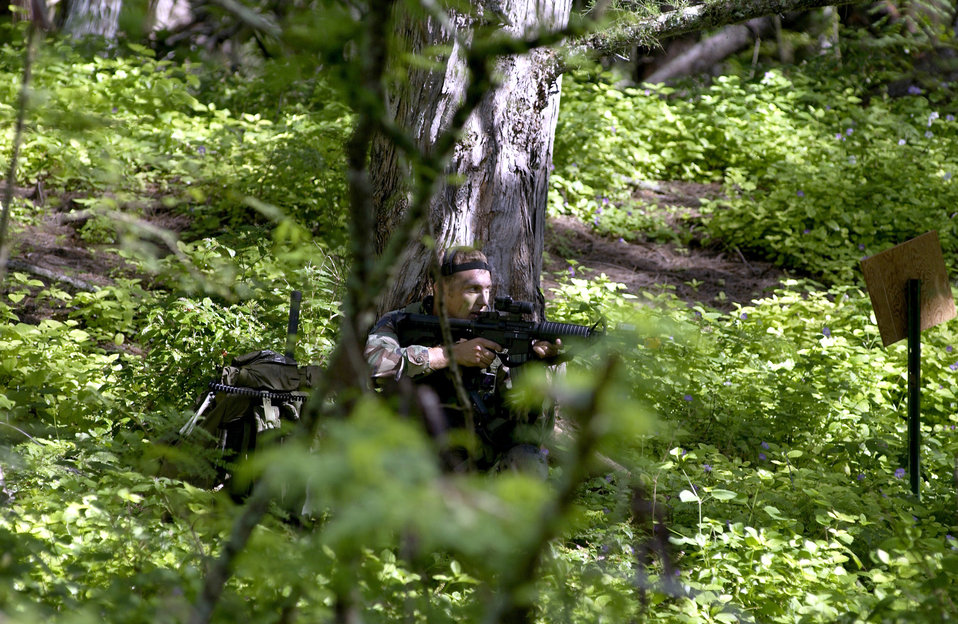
Hiding out

BELLOWS AIR FORCE STATION, Hawaii -- During a readiness exercise held here recently, Senior Airman Chris Frobuccino readies his firearm while establishing communications with higher headquarters, giving them coordinates for a helicopter to land and pick up some